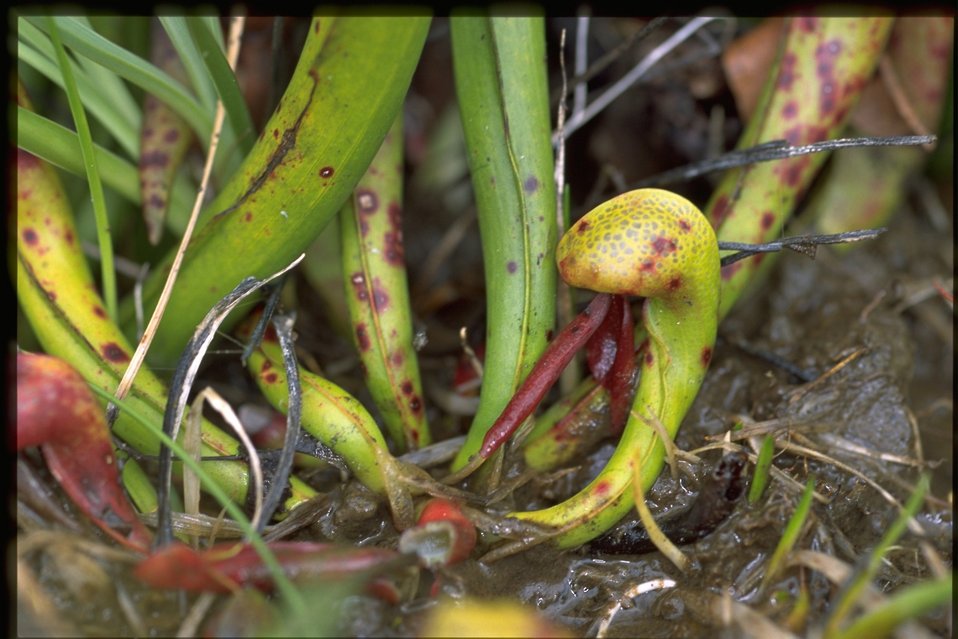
Medium shot of Cobra Lily, Darlingtonia californica.